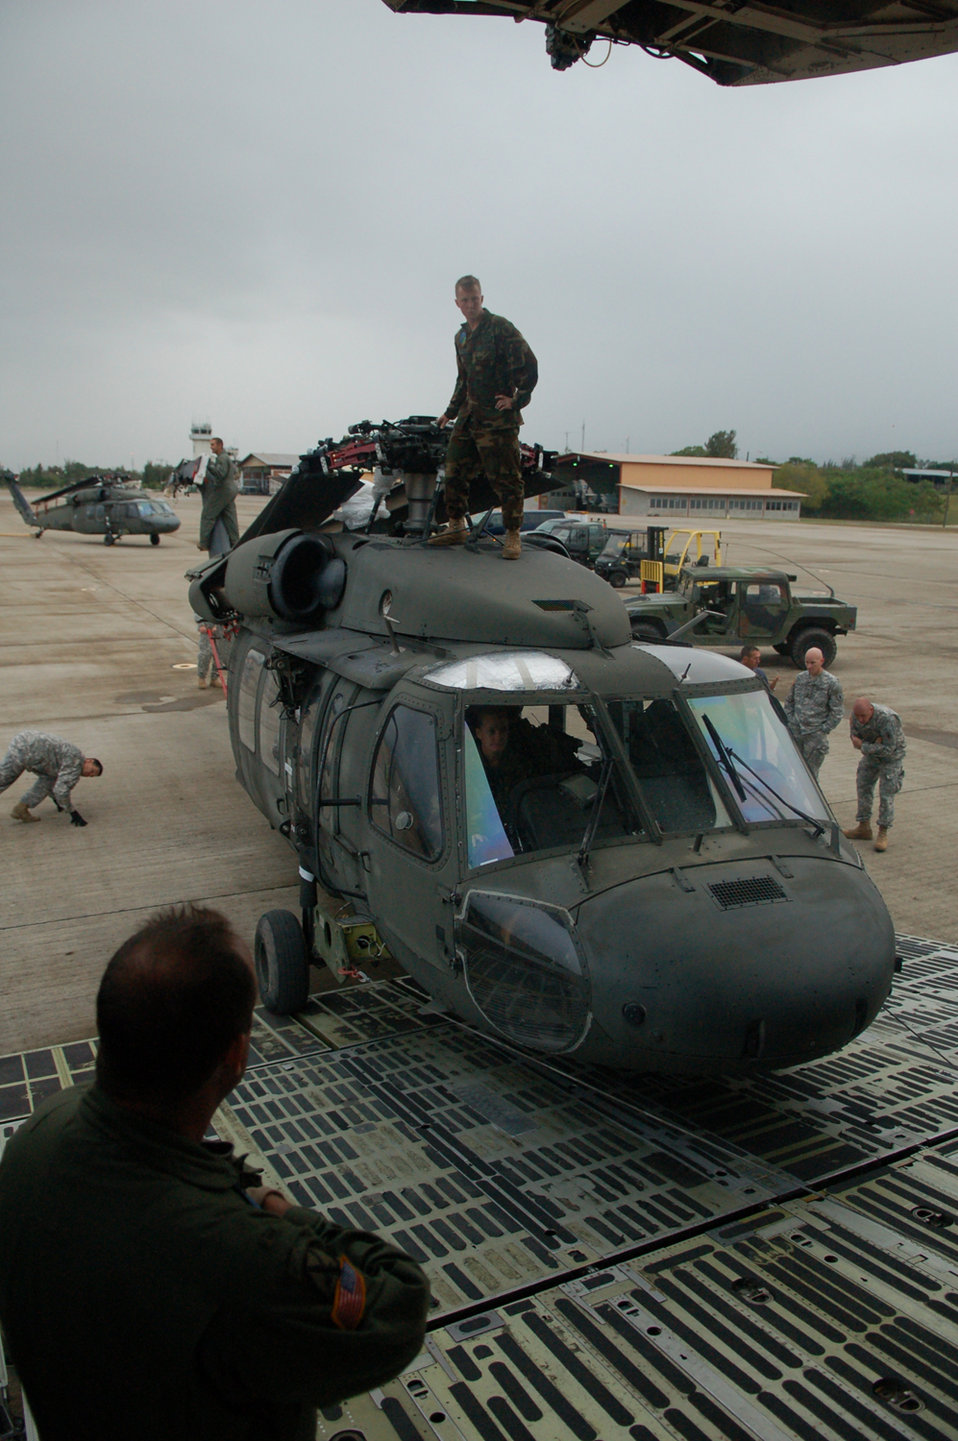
JTF-Bravo deploys to support Tropical Storm Noel relief in Dominican Republic

Soldiers and Airmen from Joint Task Force-Bravo here check for clearance as a UH-60 Black Hawk helicopter is loaded onto a C-5 Galaxy from the New York Air National Guard. A team of 19 Airmen and Soldiers and two helicopters from Joint Task Force-Bravo departed here Nov. 5 heading for the Dominican Republic to assist with recovery efforts in the wake of Tropical Storm Noel.